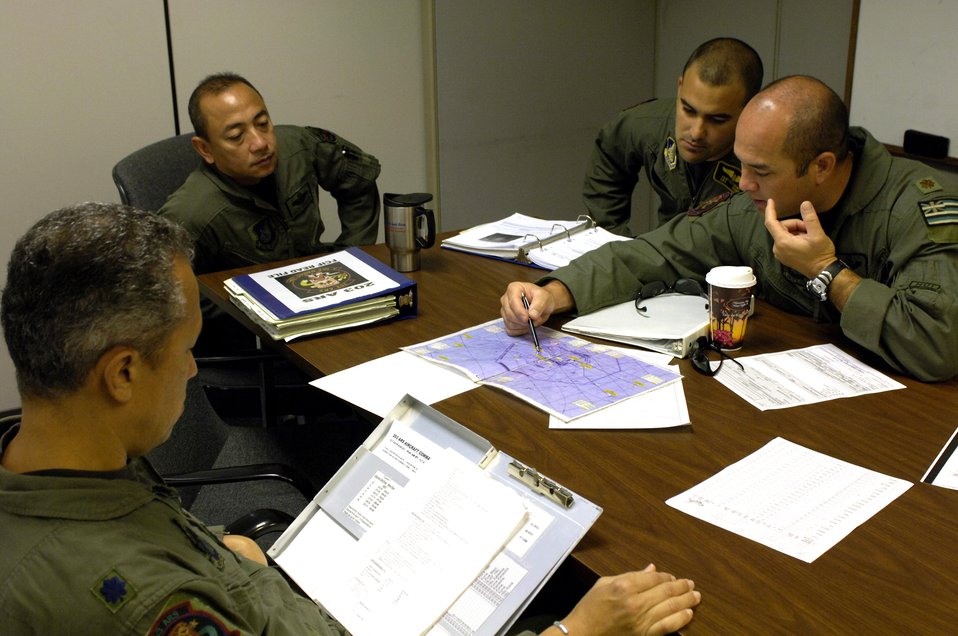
Hawaii's Guard

Aircrew members look over a map during their preflight crew briefing before flying an air refueling mission Thursday, April 20, 2006 from Hickam Air Force Base, Hawaii. The aircrew is with the Hawaii Air National Guard's 203rd Air Refueling Squadron.